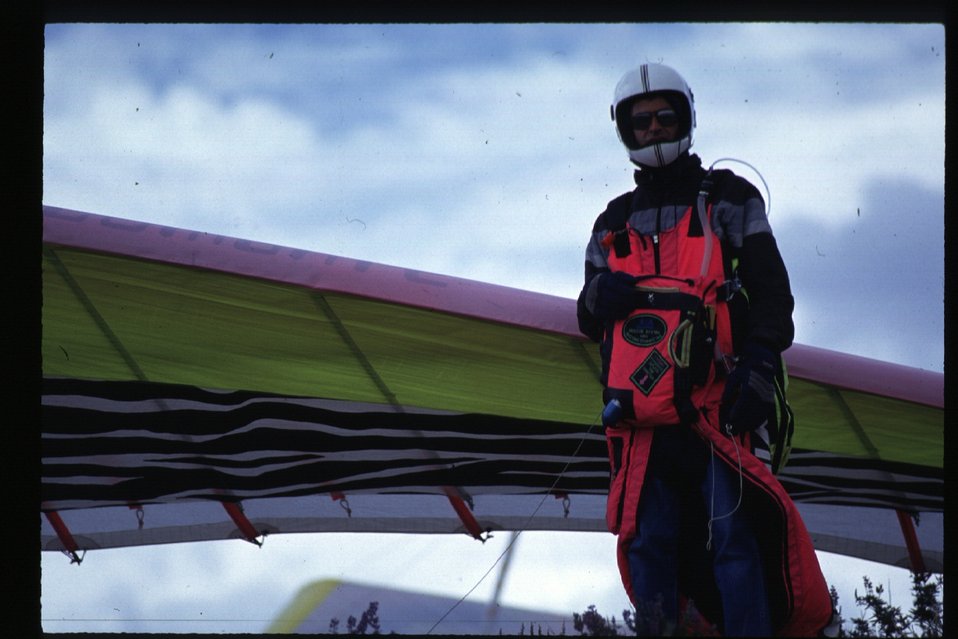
Hang Gliders on King Mountain Arco Idaho Idaho Falls Field Office USRD Upper Snake River District